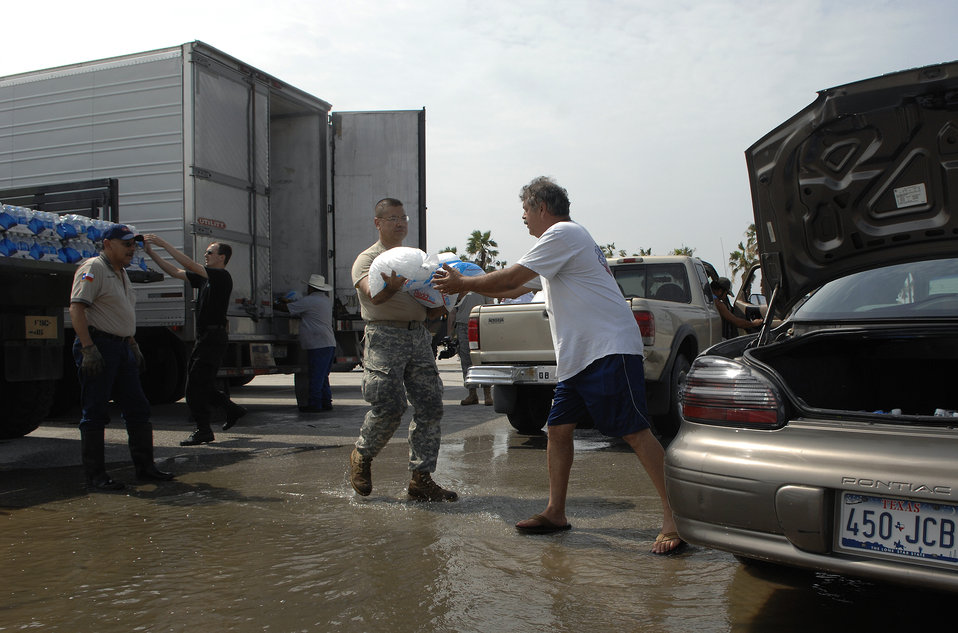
Hurricane Dolly

Army Spc. Luis Dominguez hands out bags of ice July 24 to residents of South Padre Island, Texas, the morning after the island was struck by Hurricane Dolly. Nearly 4,000 bags of ice, 50 tons of water and 1,200 meals were delivered to families by Texas Task Force 1 members. Specialist Dominguez is stationed with the 133rd Field Artillery at New Braunfels, Texas.